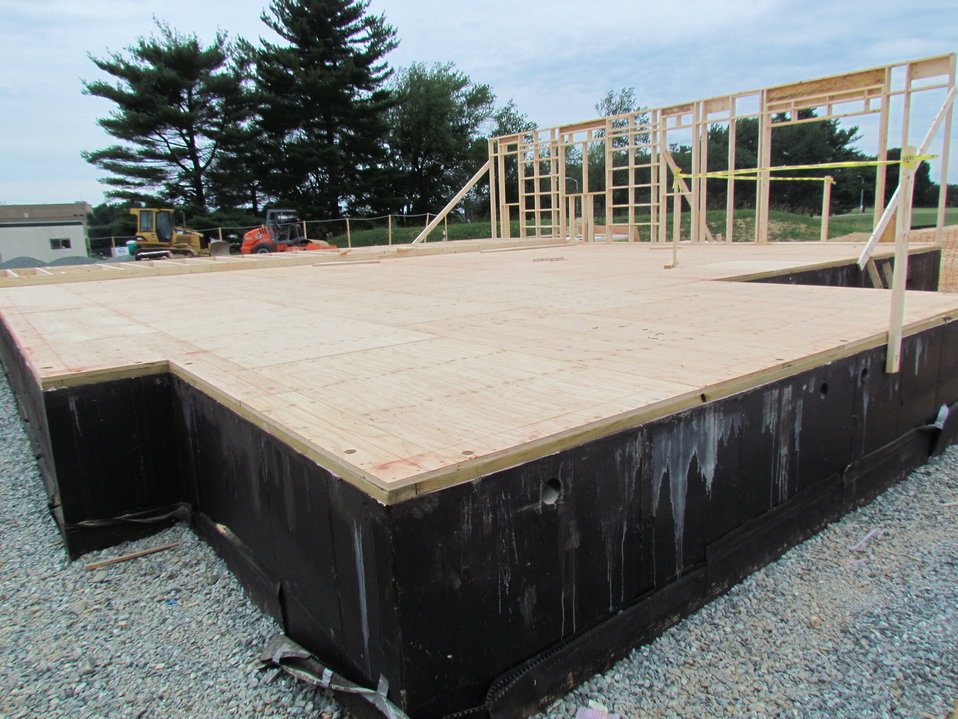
Net-Zero Energy Residential Test Facility - Picture showing subfloor in place and the start of the first floor wall framing.